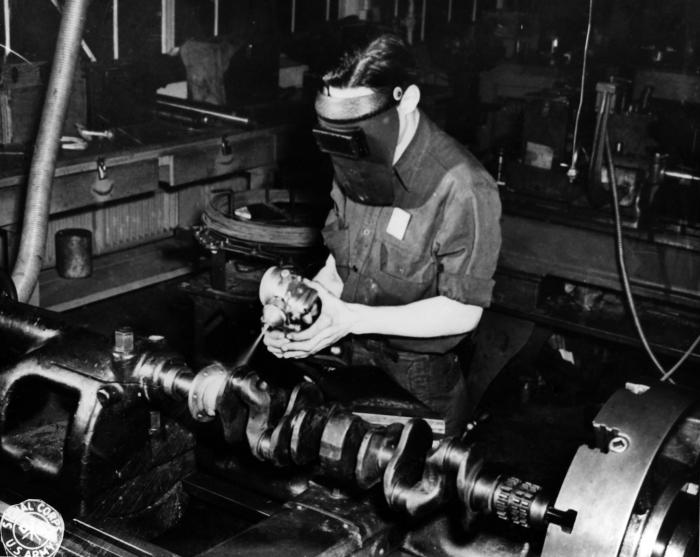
This historic image, provided by the Center for Disease Control's (CDC), National Institute for Occupational Safety and Health (NIOSH), depicted an industrial worker who was in the process of what appeared to be spraying an unknown substance on to a crankshaft inside a machine shop. The man was wearing a protective face mask covering his entire face, however, he was wearing no protective gloves. It cannot be determined from this photograph, whether or not the man had donned a filtered breathing mask.